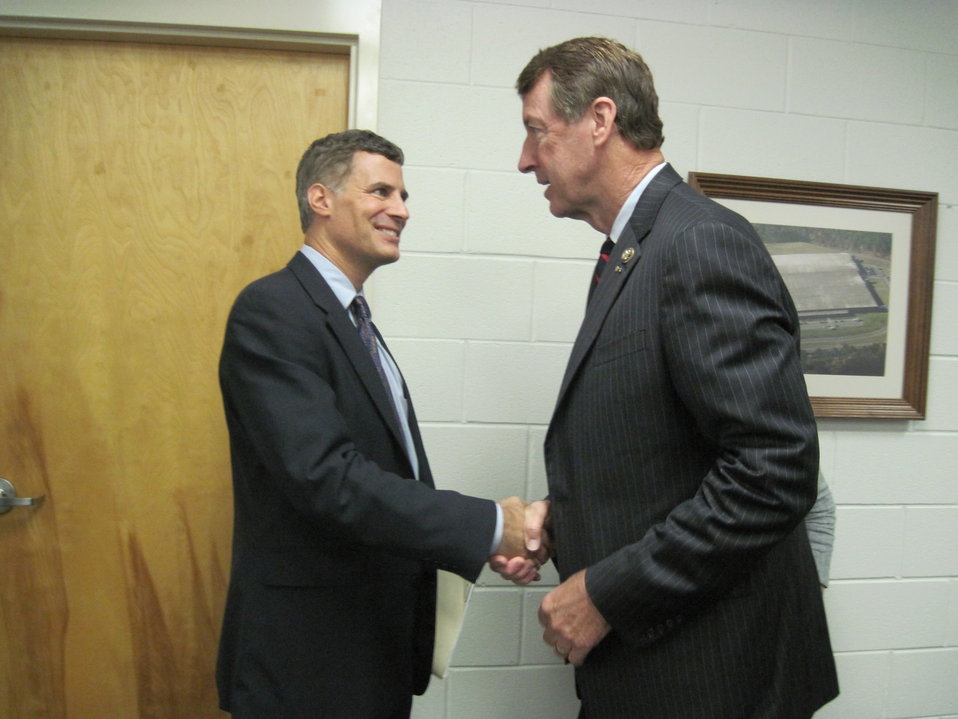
Krueger in NC, 7/12/10

Assistant Secretary for Economic Policy and Chief Economist at the Treasury Department Alan Krueger was joined by Congressman Bob Etheridge (NC-2) in Sanford, NC.

Krueger announced a new report showing the benefits of the Hiring Incentives to Restore Employment (HIRE) Act of 2010 which provides employers an incentive to hire workers who have been unemployed for 60 days or longer by exempting wages paid to these workers from the employer's 6.2 percent share of Social Security payroll taxes for the remainder of the year. In addition to exempting employers from these payroll taxes, the HIRE Act allows employers to claim a tax credit of up to $1,000 for each newly hired qualifying worker who is retained for one year. An employer is eligible to receive almost $3,500 in tax savings from hiring an unemployed worker who is paid $40,000 in salary this year.